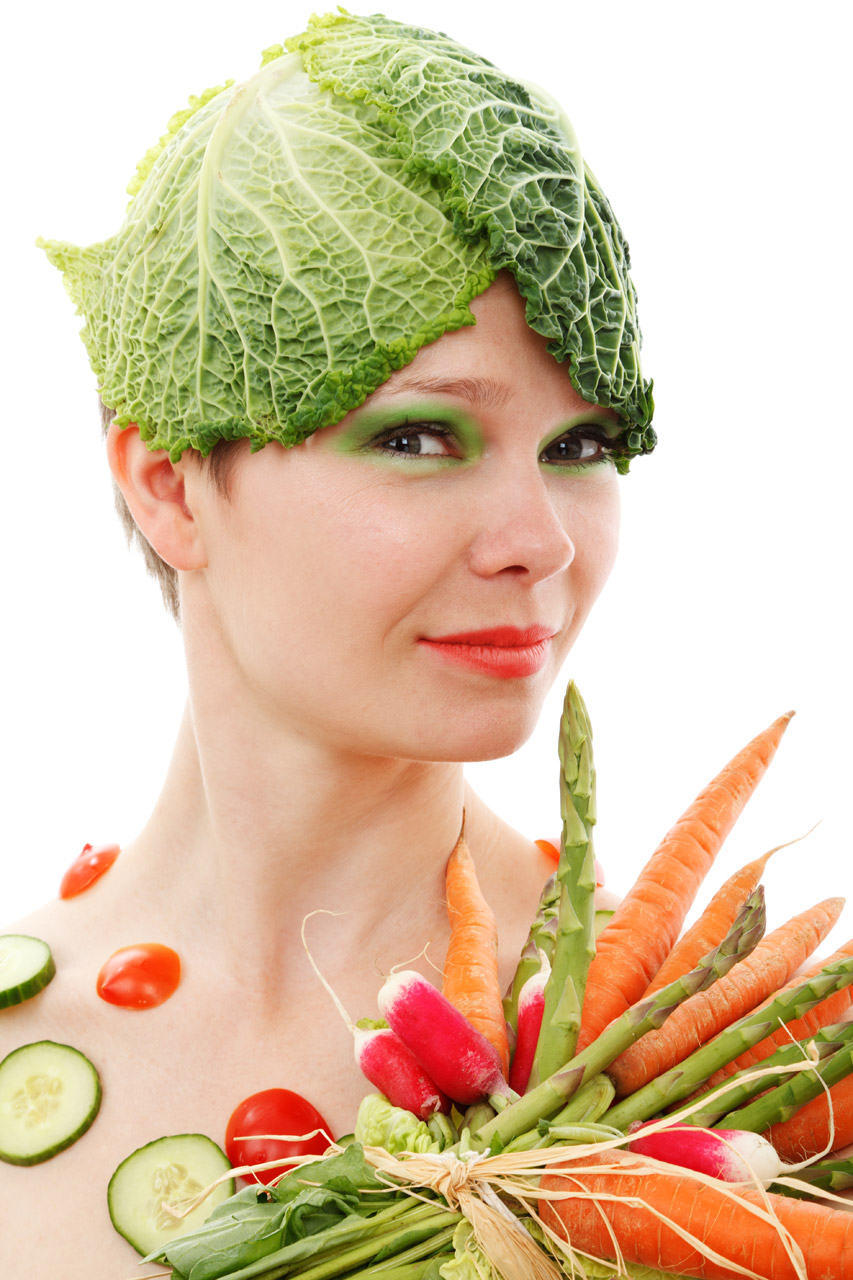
Vegetable girl

Young woman (jana svojsova) wearing colorful vegetable isolated on white background.